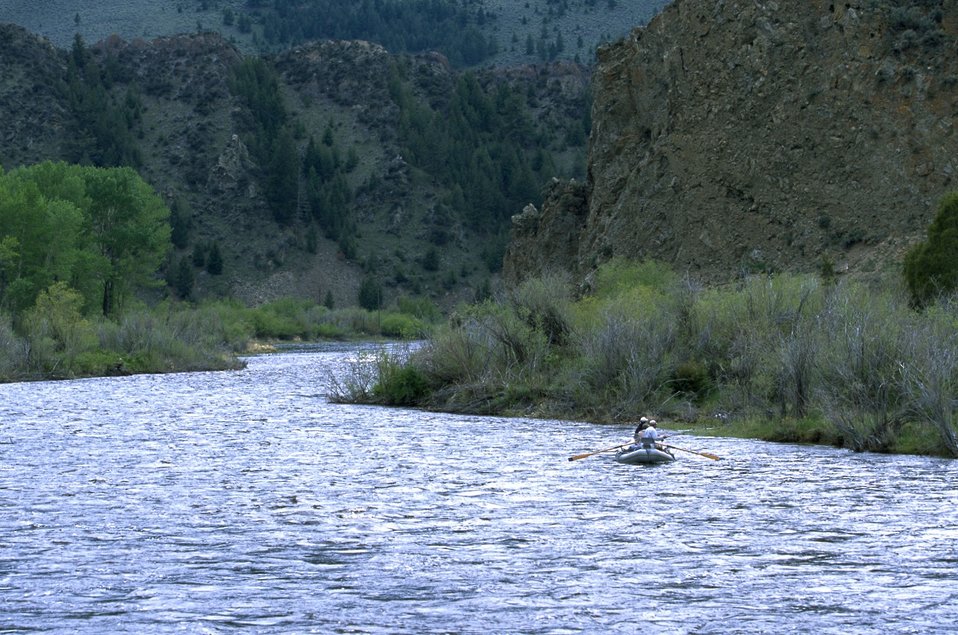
Fishing on the wide Big Hole River